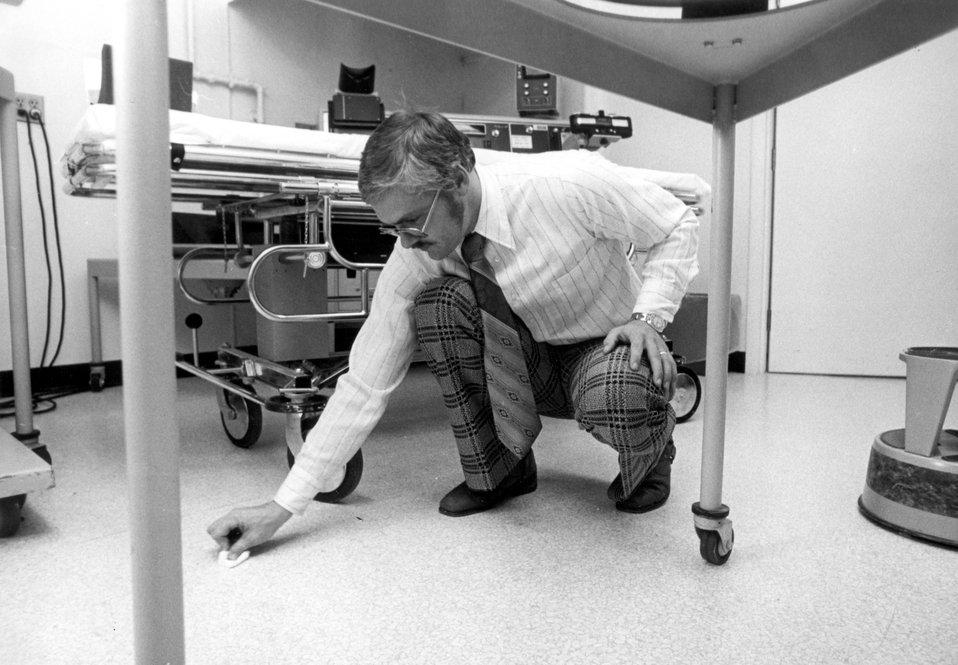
During an AEC inspection of a licensed hospital, the inspector swabs the floor to test the possible radioactive contamination.